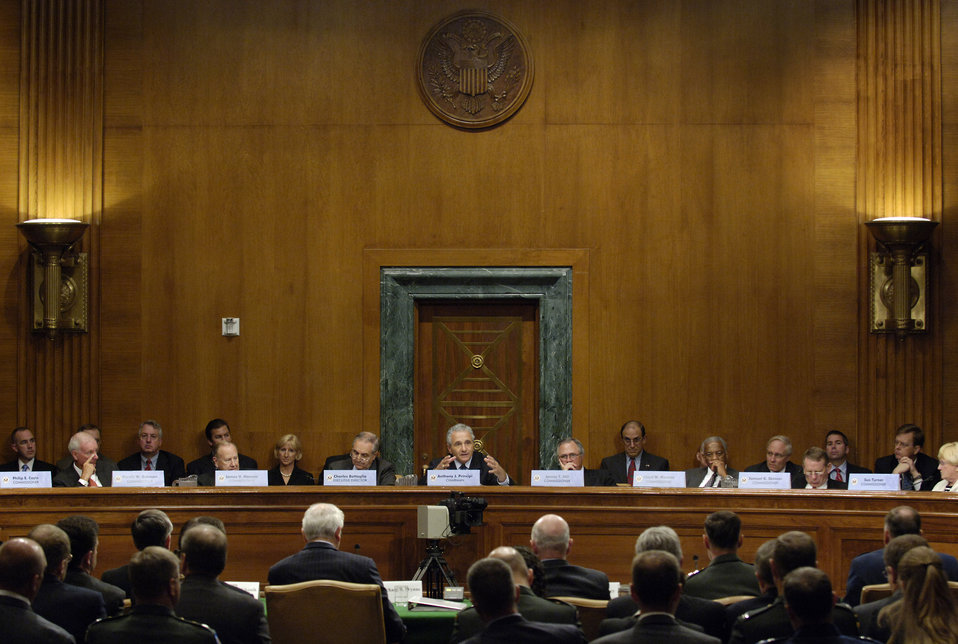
BRAC hearings

WASHINGTON -- Base Realignment and Closure Commission Chairman Anthony J. Principi (center) questions senior Defense Department officials during a hearing Aug. 20 on Capitol Hill. The commission called the hearing to give members of the Defense Department a final opportunity to present testimony before the commission's final deliberations concerning their BRAC recommendations to the president.